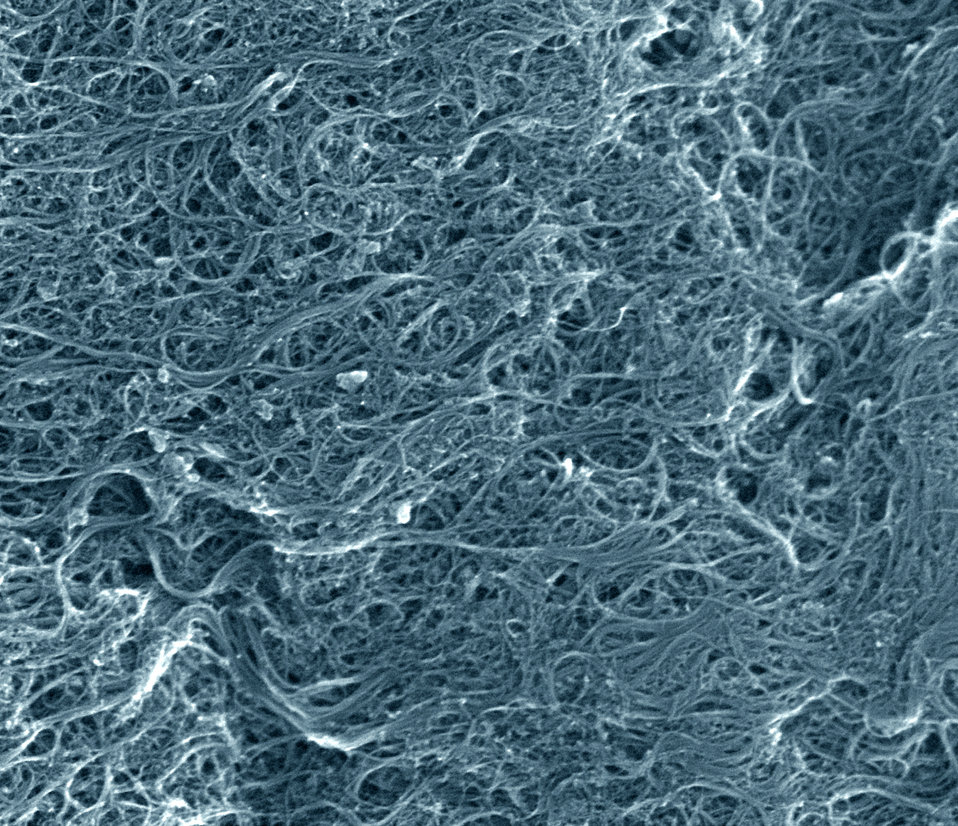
Nanotube Soot

Scanning electron microscope image of a typical sample of the NIST single-wall carbon nanotube soot standard reference material. The nanotubes tend to stick together and form smaller and larger bundles. Some of the impurities also are visible. The image shows an area just over a micrometer wide. (Color added for clarity.)